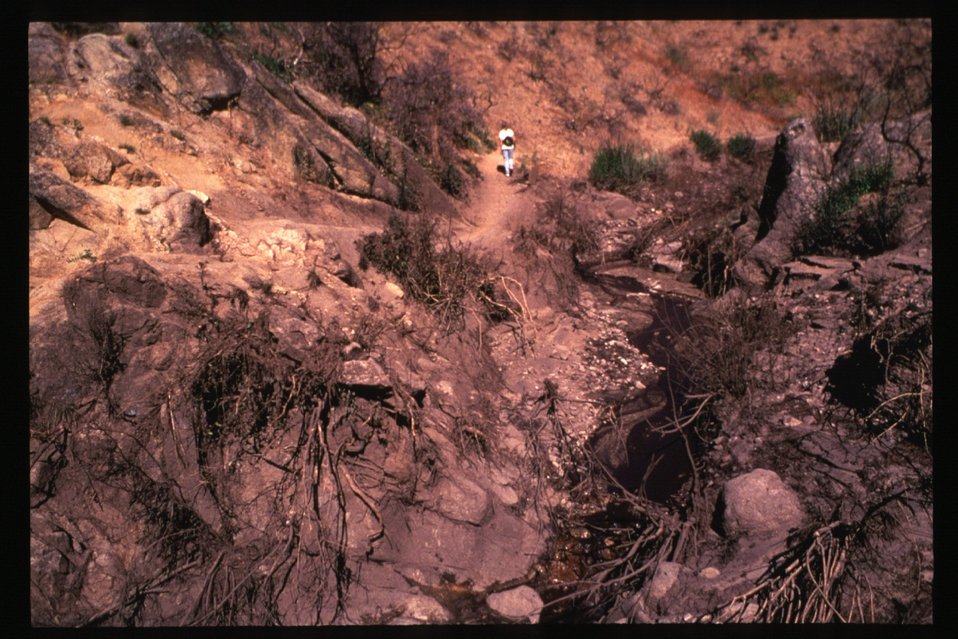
8th Street Fire Four Rivers Field Office LSRD Lower Snake River District